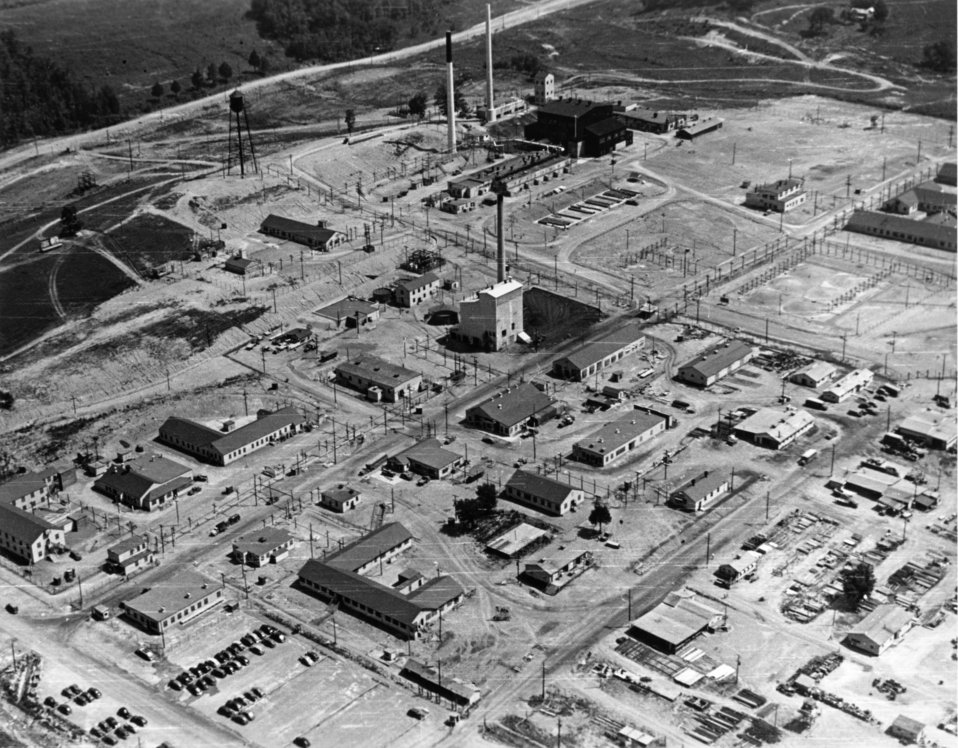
X-10 at Oak Ridge